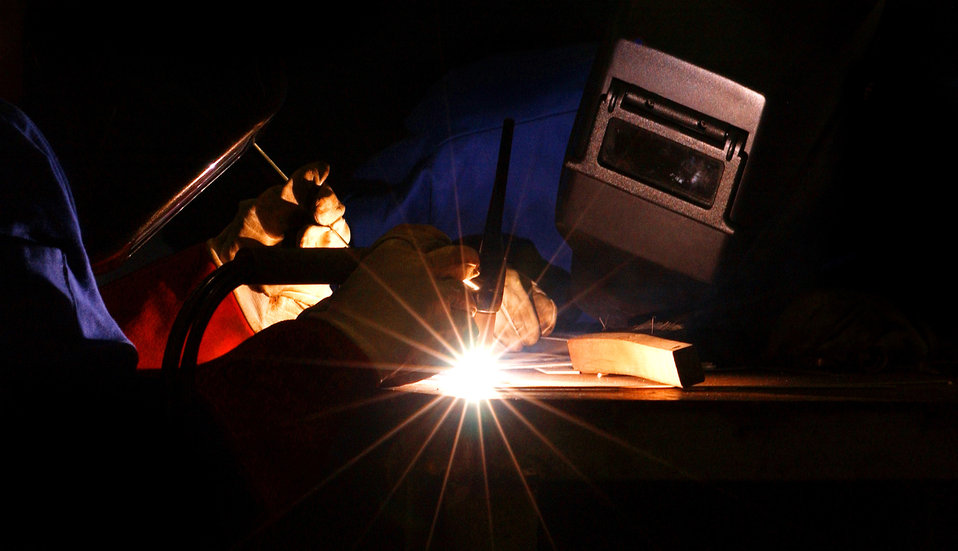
Merger provides Airmen chance to ?weld? new skills

Airmen and local nationals practice oxyacetylene welding June 4 at Kadena Air Base, Japan. The process uses fuel gases and oxygen to cut and weld metals. Personnel from vehicle mechanics and body shop are completing a newly implemented welding course at the Pacific Air Forces Transportation Training Center.